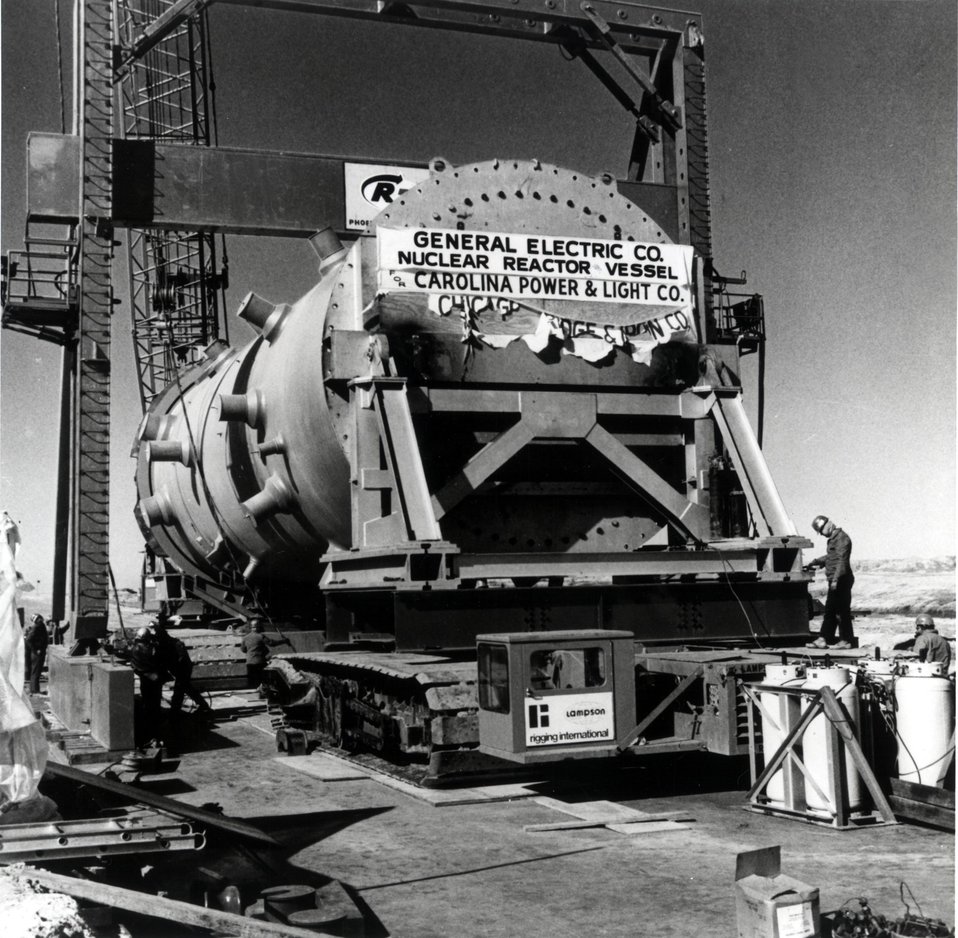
Brunswick Steam Electric Plant site crawler tractors on the barge preparing to move the reactor pressure vessel from the intake canal unloading site to the plant itself.